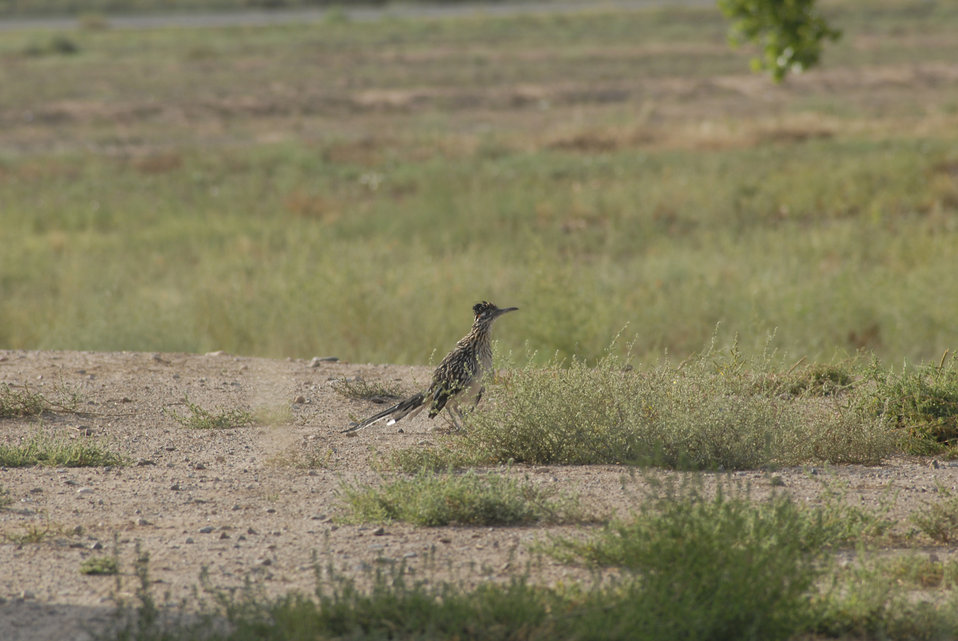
The Greater Roadrunner (also known as a Californian Earth-cuckoo) is a long-legged bird in the cuckoo family. Roadrunners have four toes on each zygodactyl foot; two face forward, and two face backward. The name roadrunner comes from the bird's habit of racing down roads in front of moving vehicles and then darting to safety in the brush. This roadrunner was roaming the grounds at the Southwestern Indian Polytechnic Institute (SIPI) in Albuquerque, New Mexico on September 9, 2008.